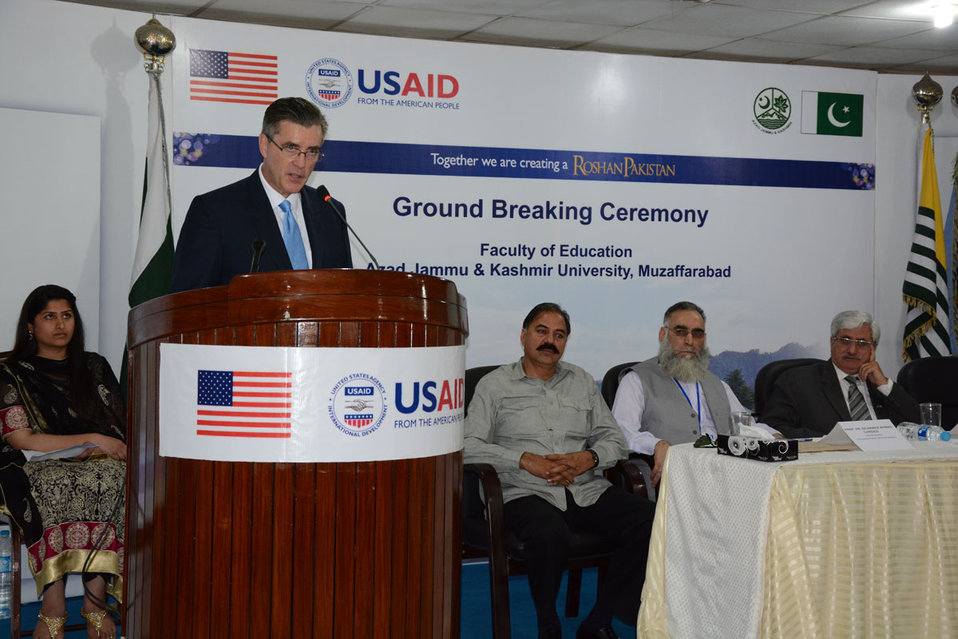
The United States Ambassador to Pakistan, Richard Olson broke ground for a U.S. funded construction of a new Faculty of Education building in Muzaffarabad, AJK. 25